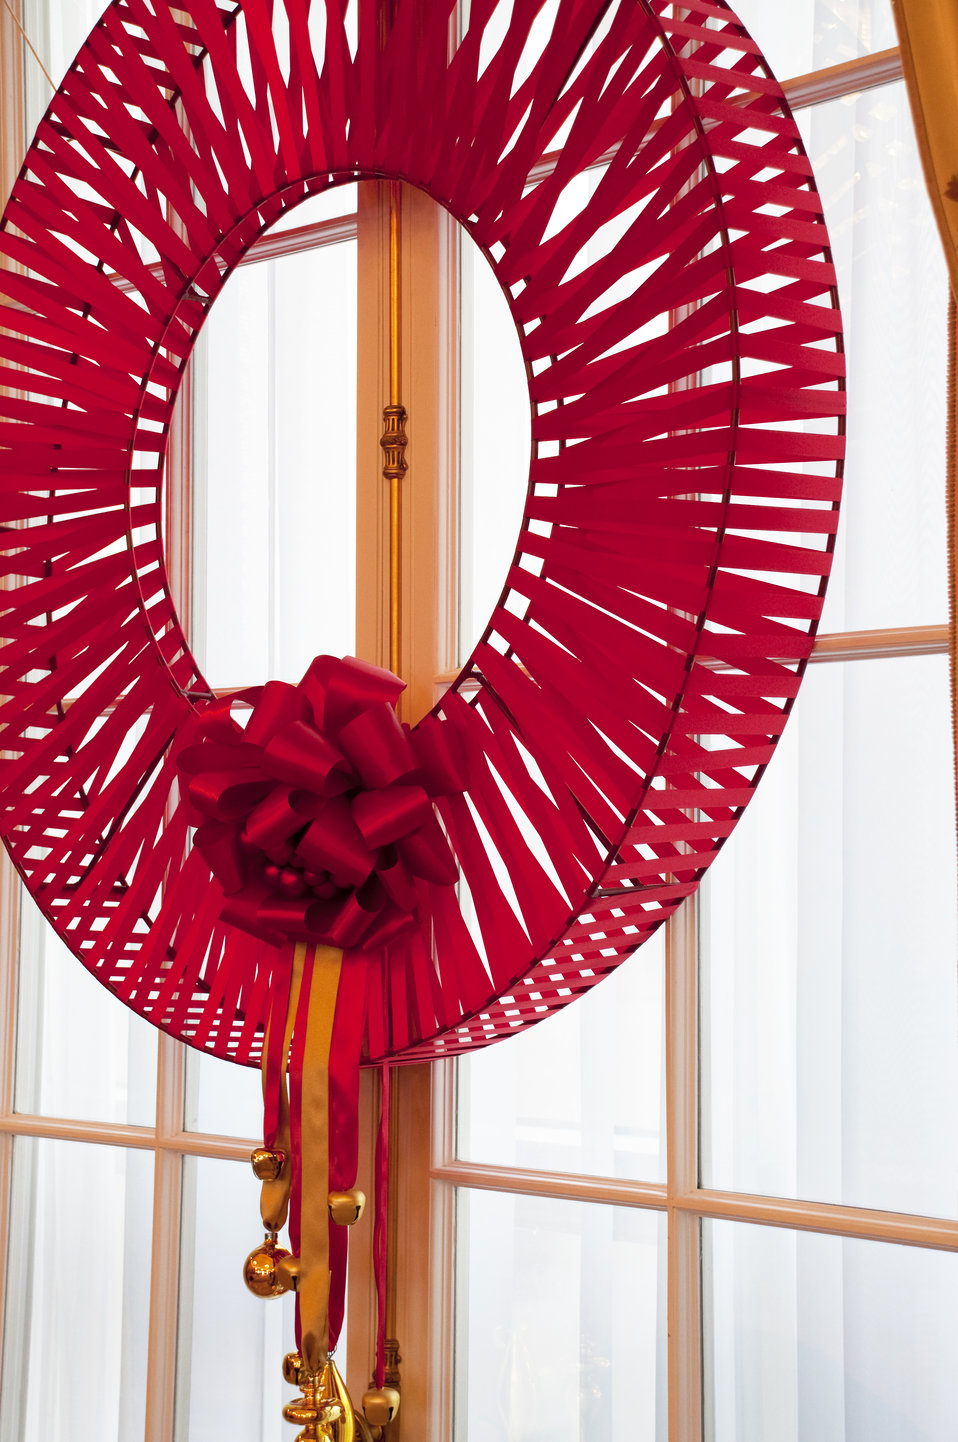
The U.S. Department of State Partners With Time Inc. and InStyle To Decorate the Benjamin Franklin State Dining Room

The U.S. Department of State partners with Time Inc. and InStyle to decorate the Diplomatic Reception Rooms for the Holidays in December 2010. Pictured in this photo is the Benjamin Franklin State Dining Room.